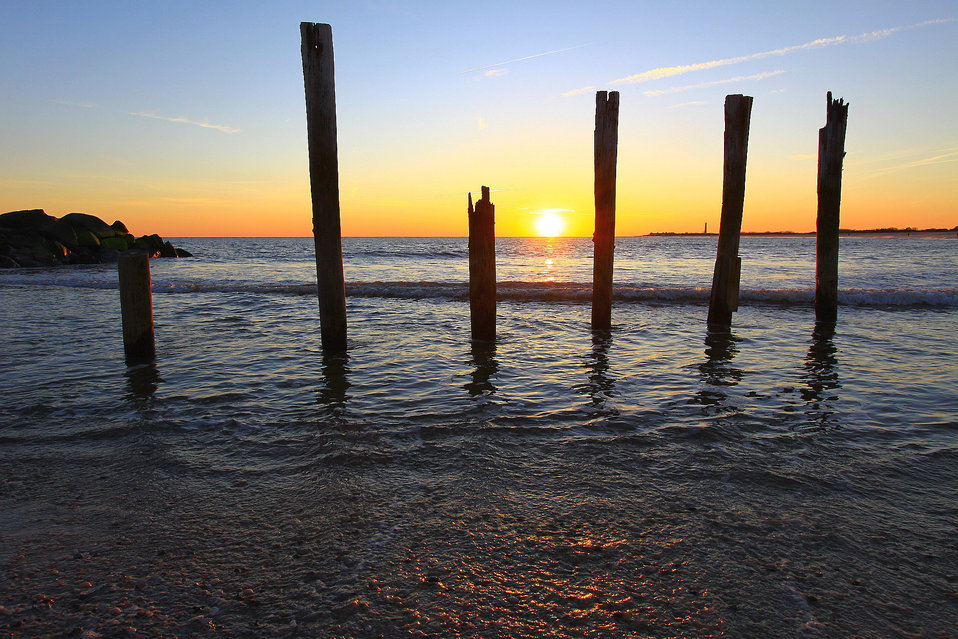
Sunset

Cape may nj sunset.